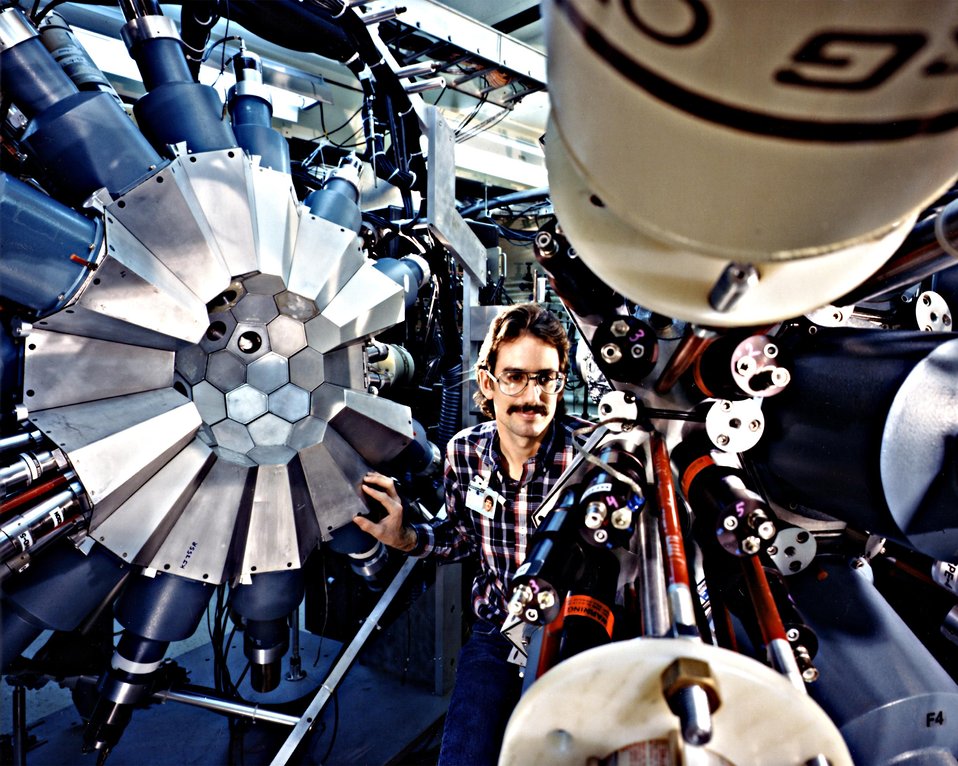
ARRAY OF DETECTORS.

A TECHNICIAN AT THE HOLIFIED HEAVY ION RESEARCH FACILITY OF THE OAK RIDGE NATIONAL LABORATORY IN TENNESSEE MAKES ADJUSTMENTS TO AN ARRAY OF DETECTORS USED TO STUDY EXCITED NUCLEAR MATTER PRODUCED DURING HIGH SPEED COLLISIONS OF VERY MASSIVE NUCLEI. THIS ADVANCED DETECTOR SYSTEM TRACKS THE EXCITED NUCLEI MATTER THROUGH ITS BRIEF EXISTENCE OF ABOUT ONE-BILLIONTH OF A SECOND.